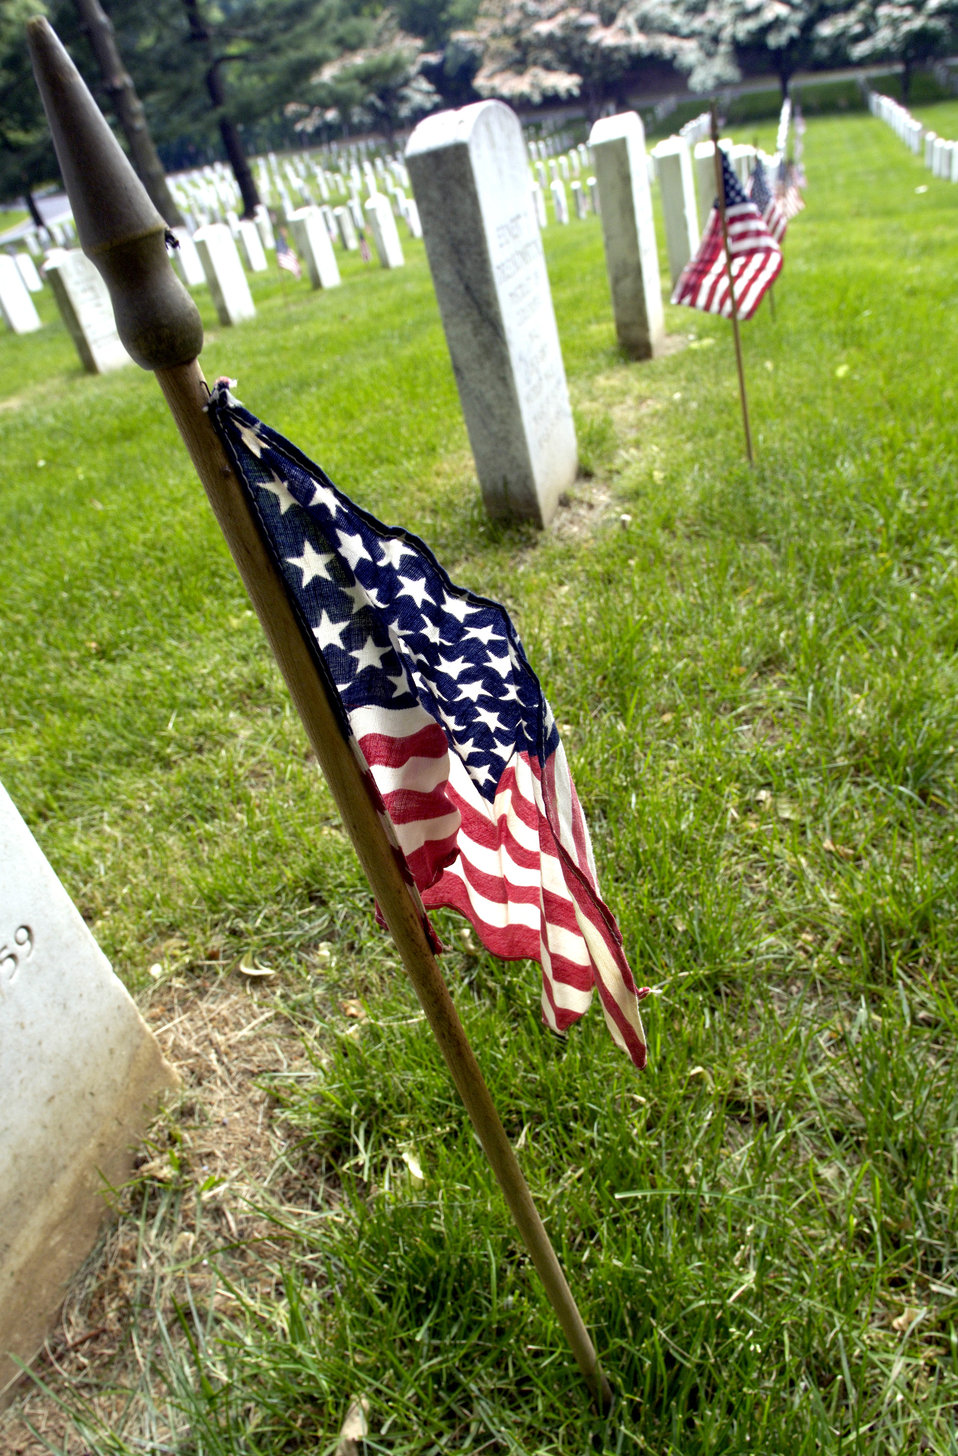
In remembrance

Soldiers, Sailors, Airmen and Marines from across the Washington D.C. area joined forces to place more than 227,000 flags at the front of headstones at Arlington National Cemetery on Thursday, May 25, 2006. The flags will remain at the headstones through Memorial Day.